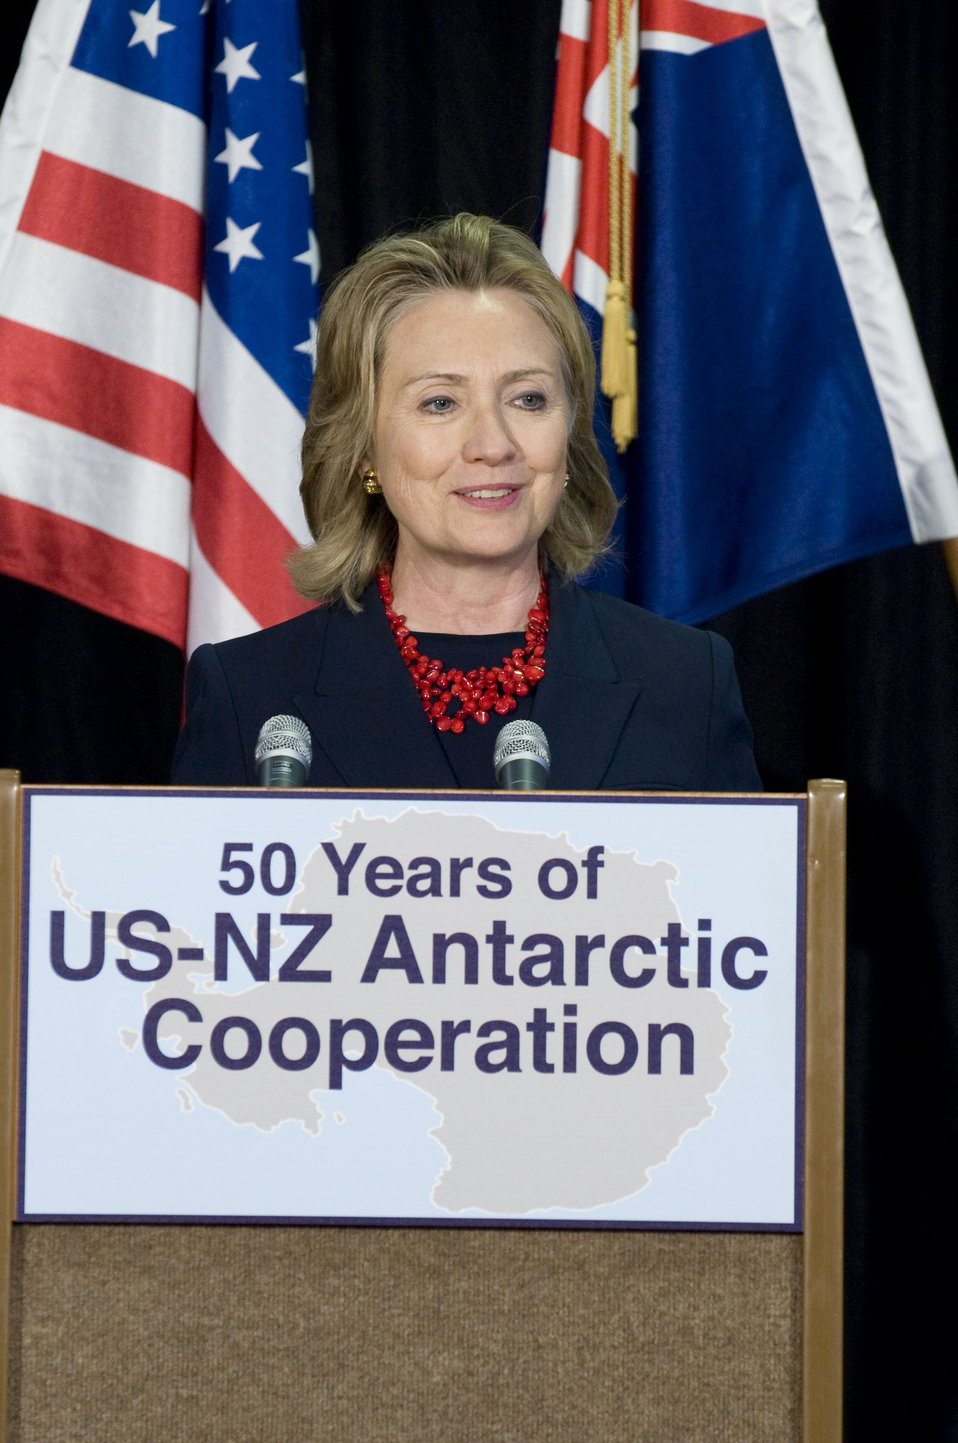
Secretary Clinton Delivers Remarks on the Antarctic Program

U.S. Secretary of State Hillary Rodham Clinton delivers remarks at an event with the U.S. Antarctic Center and Antarctica New Zealand in Christchurch, New Zealand, on November 5, 2010.